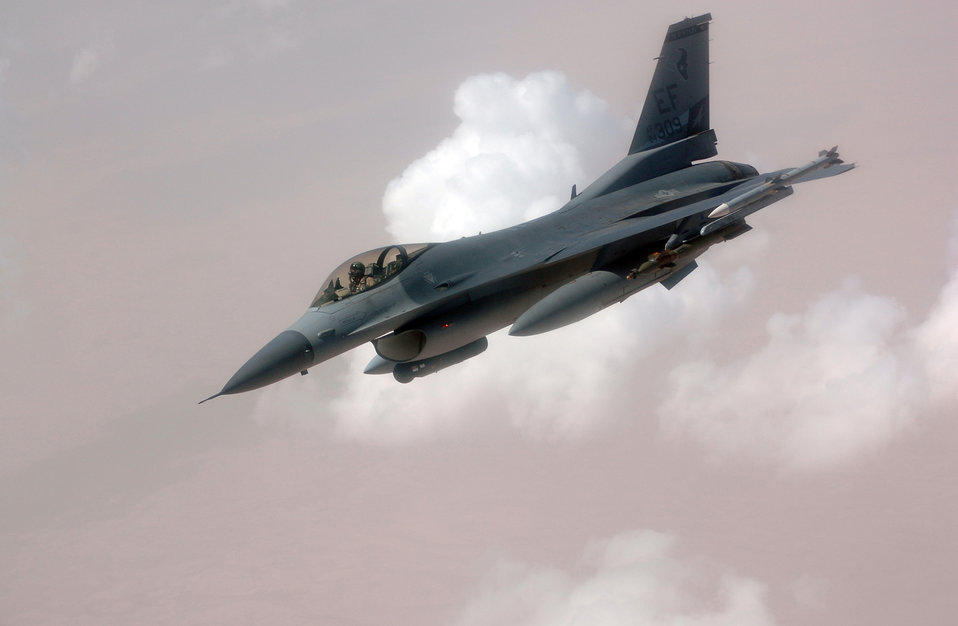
Sept. 21 airpower summary

An F-16 Fighting Falcon turns away after a mid-air refueling over Southwest Asia. The F-16 Fighting Falcon is a compact, highly maneuverable multi-role fighter and has proven itself in air-to-air combat and air-to-surface attack. It provides a relatively low-cost, high-performance weapon system for the United States and allied nations.